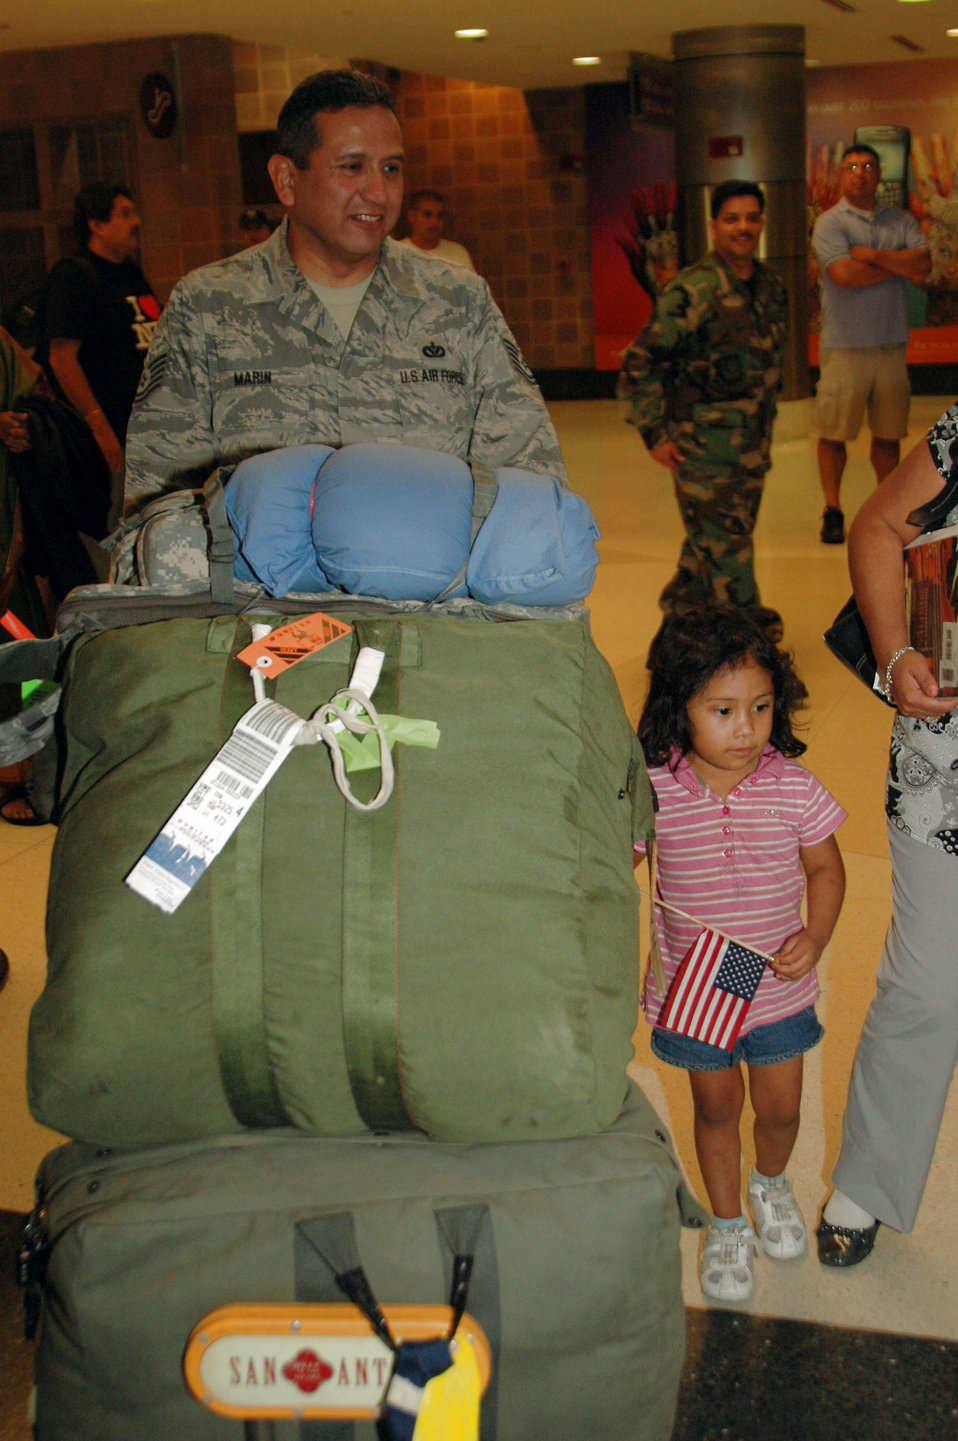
Welcome home

A member of the 433rd Civil Engineer Squadron is welcomed home after six months in Afghanistan Sept. 22 in San Antonio. Family and friends met them at the San Antonio Airport with banners and cheers. The Airmen built and repaired structures at Bagram Airfield, Afghanistan, and forward operating locations. They installed air-conditioning units for Soldiers and brought older buildings up to U.S. military construction codes.